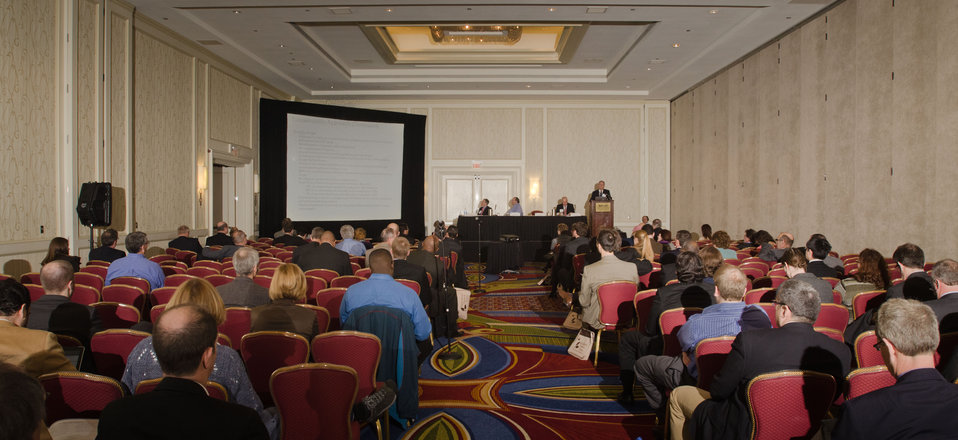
Department of Energy Contractor CNJV LLC Senior Advisor Dr. Bryce Stokes, Ph.D., talked about 'Biomass Potential – the Billion-Ton Study Update' during the Renewable Energy session on “Making Markets for Biomass,” at the 2012 Agricultural Outlook Forum, “Moving Agriculture Forward, Growing, Innovating and Celebrating 150 Years” held at the Crystal Gateway Marriott Hotel in Arlington, Virginia, on Thursday, February 23, 2012. This year’s forum coincides with the 150th anniversary of the Department of Agriculture addressing economics, marketing, research, food safety, nutrition, conservation, rural development, alternative energy, trade and many other agricultural issues.